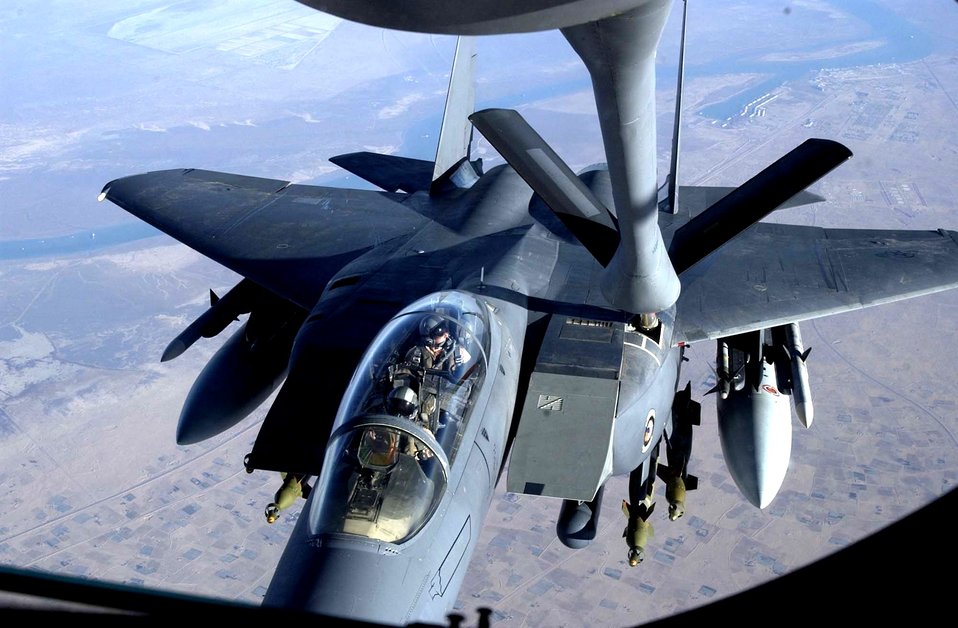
Get it 'n' go

OVER IRAQ -- An F-15E Strike Eagle refuels during a mission. The aircraft and its crew are deployed from Seymour Johnson Air Force Base, N.C. Strike Eagle crews support operations Iraqi Freedom and Enduring Freedom.